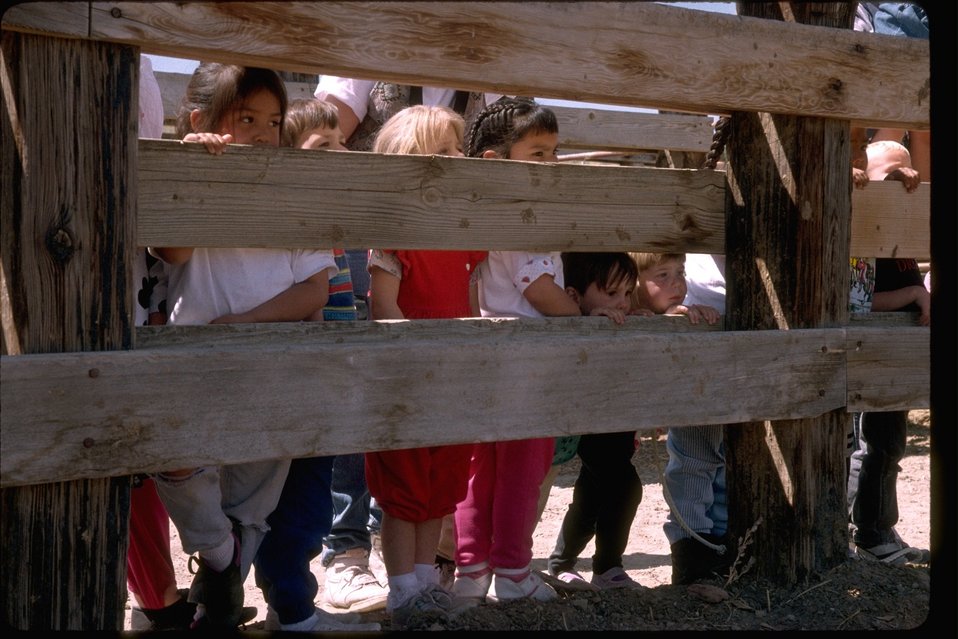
Pre-Schoolers check out the Wild Horses at the Burns Wild Horse Corral in Southeastern Oregon.